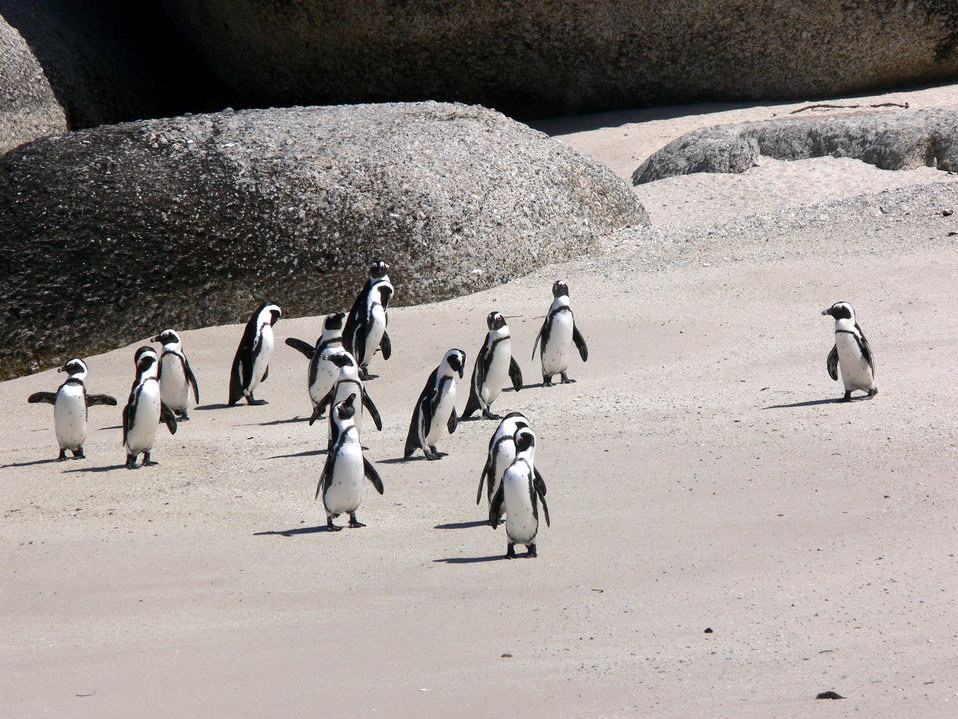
Jackass penguins on boulders beach near simons town in south africa.